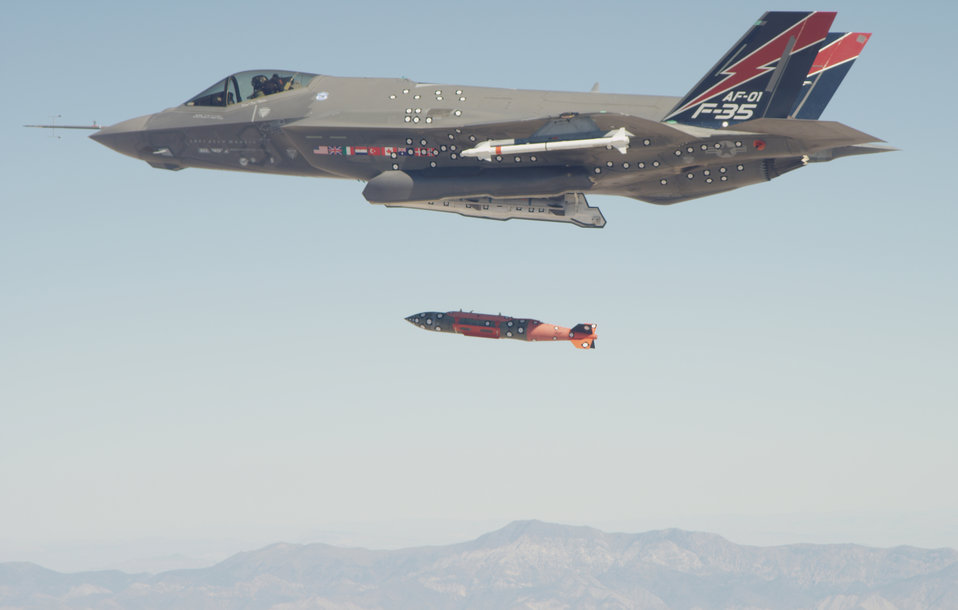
F-35 A milestone

An F-35A conventional takeoff and landing (CTOL) aircraft completed the first in-flight weapons release of a 2,000 pound GBU-31 BLU-109 Joint Direct Attack Munition (JDAM) from a 5th Generation fighter, Oct. 16.